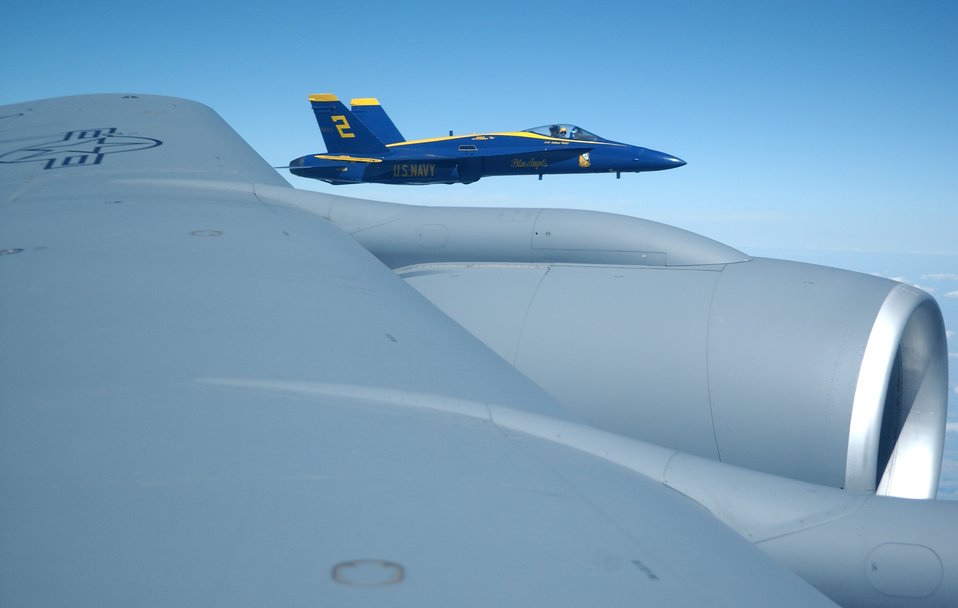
Blue Angels over Alaska

An F/A-18 Hornet from the Navy's Blue Angels stands by receive fuel from a KC-135 Stratotanker over Alaska on Aug. 14. The Blue Angels team had performed at an air show at Elmendorf Air Force Base, Alaska.